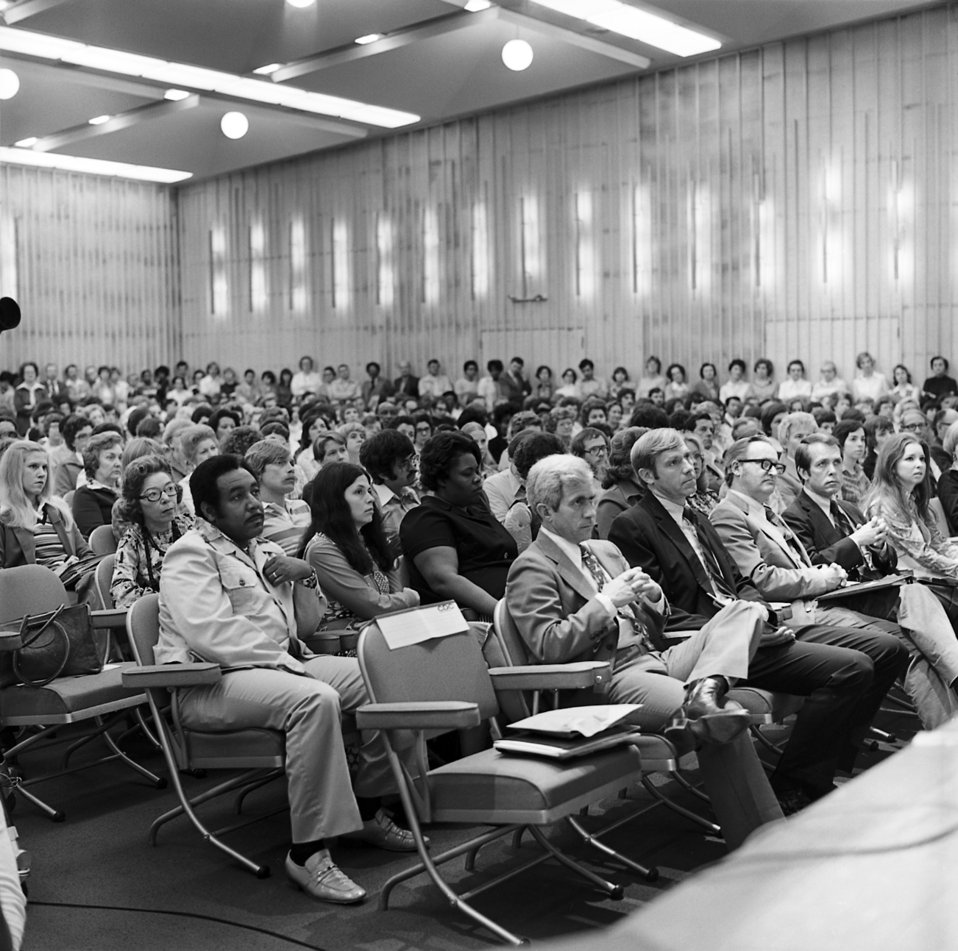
This 1977 photograph was taken during the naming of Dr. William H. Foege as Director-Designate of the CDC.